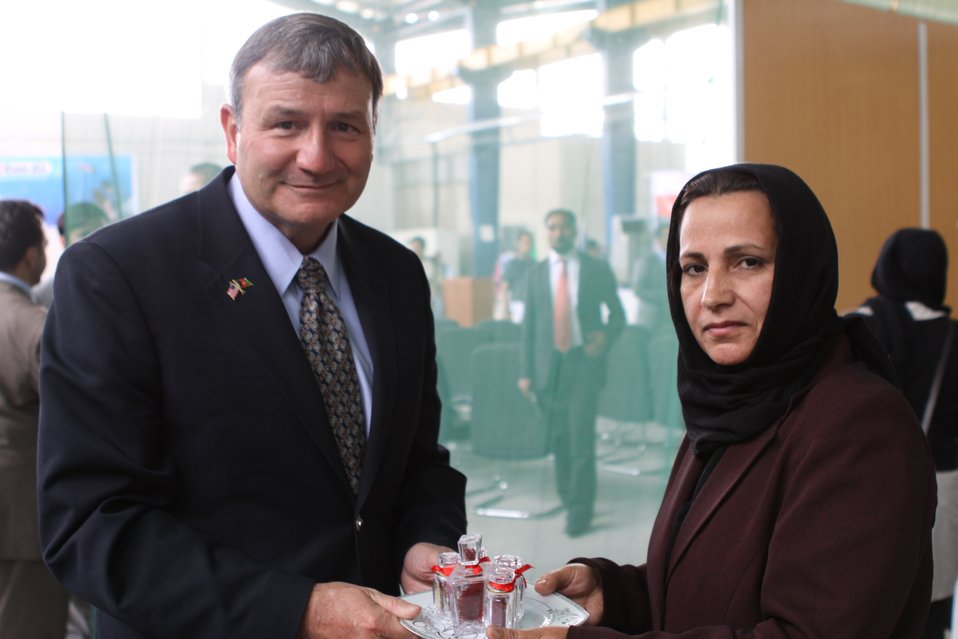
100525 Hirat Marble Conference 544